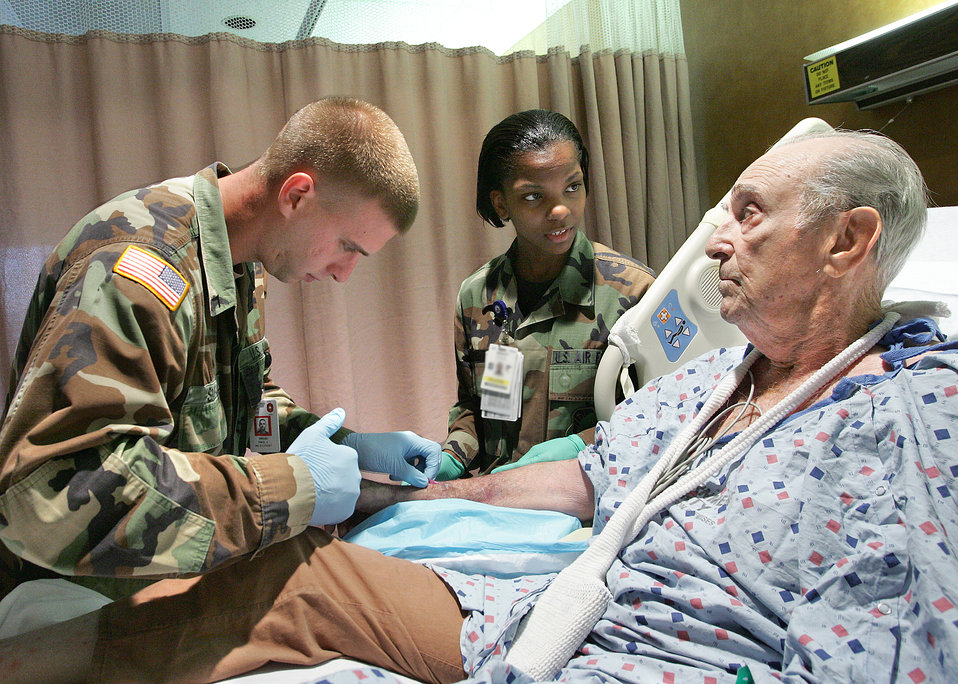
Practice makes perfect

Airman 1st Class Keoshia Bright oversees Army Private 2nd Class Paul Smead as he inserts an intravenous catheter into retired Chief Master Sgt. Joshua Ruderman's arm Sept. 27 at Wilford Hall Medical Center, Lackland Air Force Base, Texas. Airman Bright is with the 750th Medical Operations Squadron. Private Smead is training at Wilford Hall to become a licensed vocational nurse.